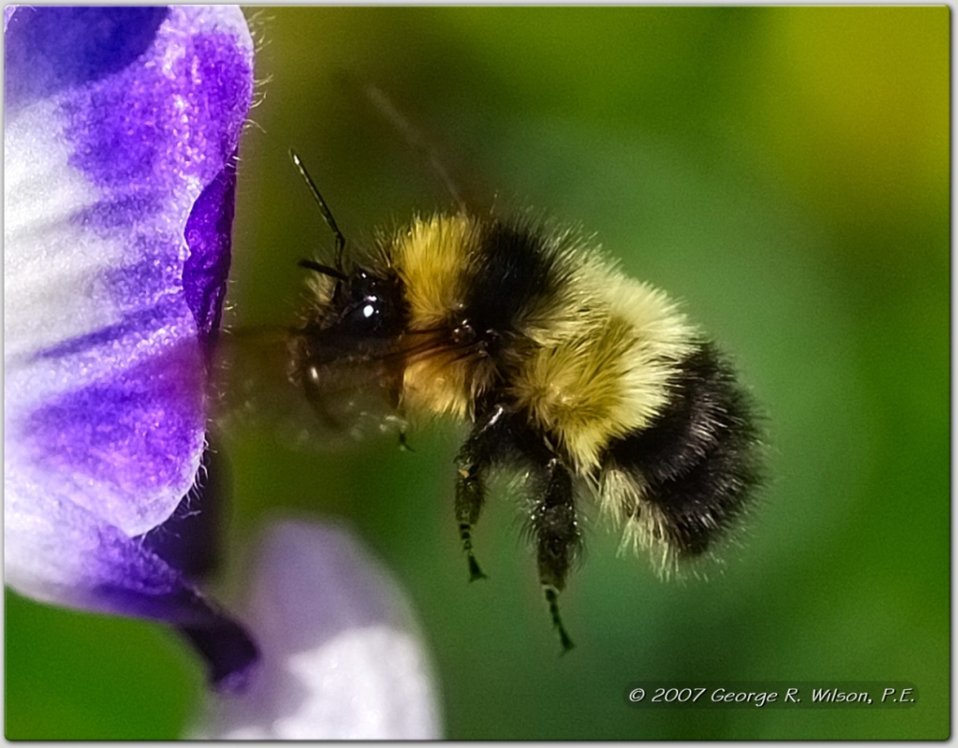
Uploaded by request of George Wilson.